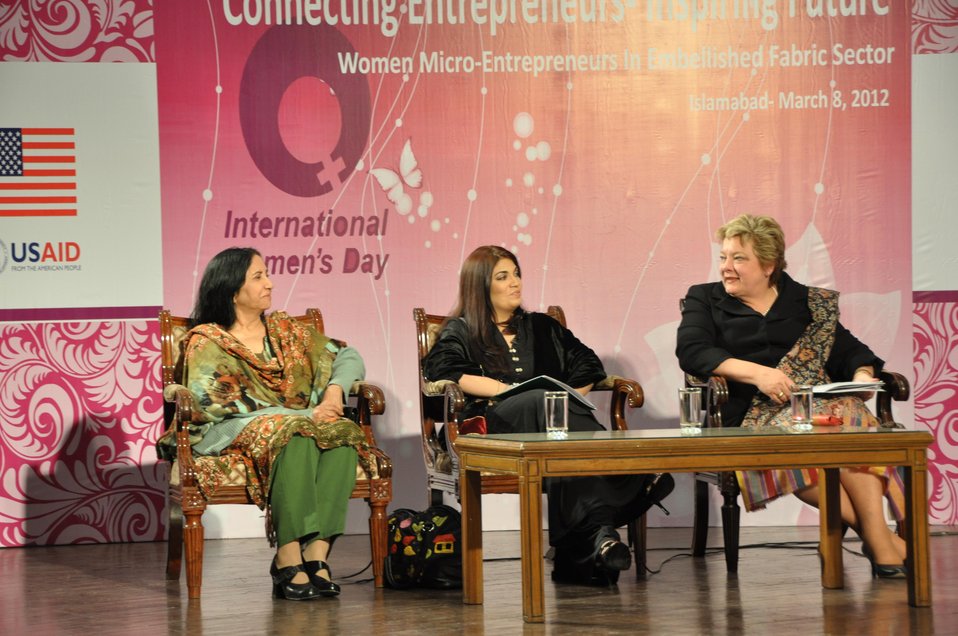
International Women’s Day

Islamabad, March 08, 2012 - The United States Agency for International Development (USAID) celebrated International Women’s Day, hosting a panel discussion with women entrepreneurs.
Panel members in addition to USAID’s
- Karen Freeman
- Wajeeha Nasreen, Sr. Product Development Manager, Gul Ahmed (famous Pakistani fabric brand)
- Dr. Nosheen, CEO, Generations (famous clothing brand)
- Razia Zubairi, Director General, Technical Education and Vocational Training Authority, Punjab
- Shaheen Khan, Sales Agent, ECDI, USAID sub-grantee